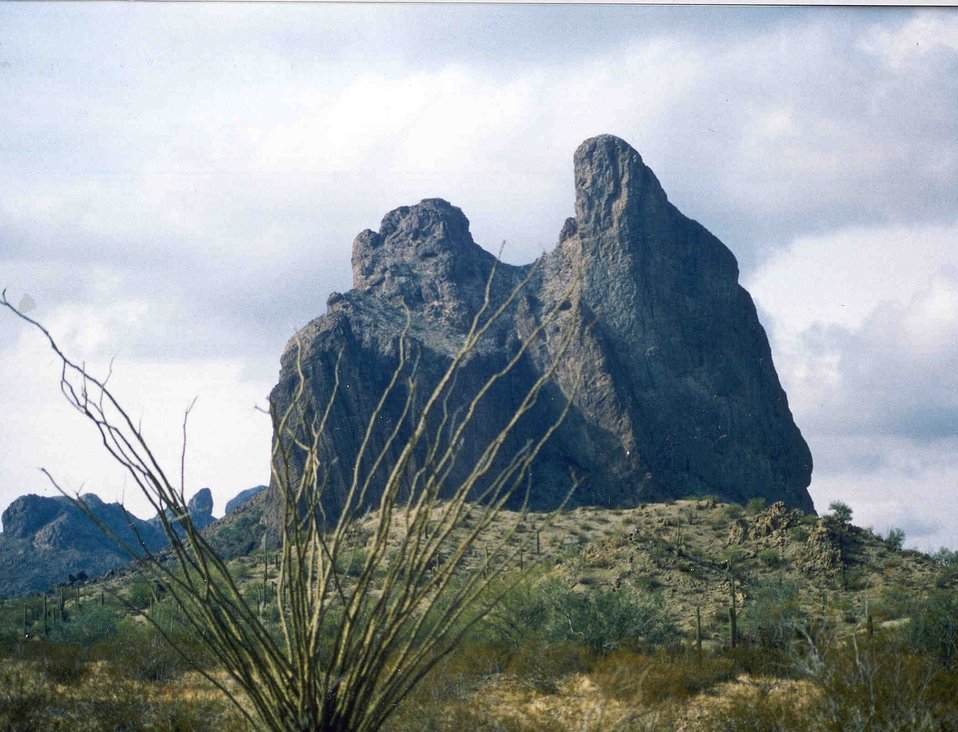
This is a picture of the rock formation "Courthouse Rock" in the Eagletails Wilderness Area.